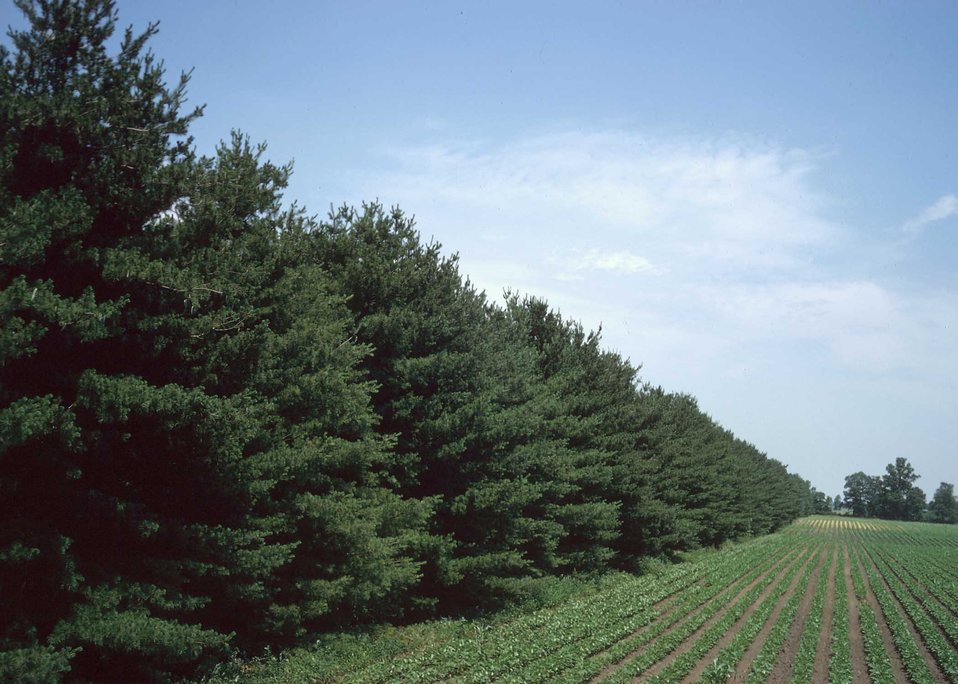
A windbreak of conifer trees provides year-round protection from wind erosion for this cropland.